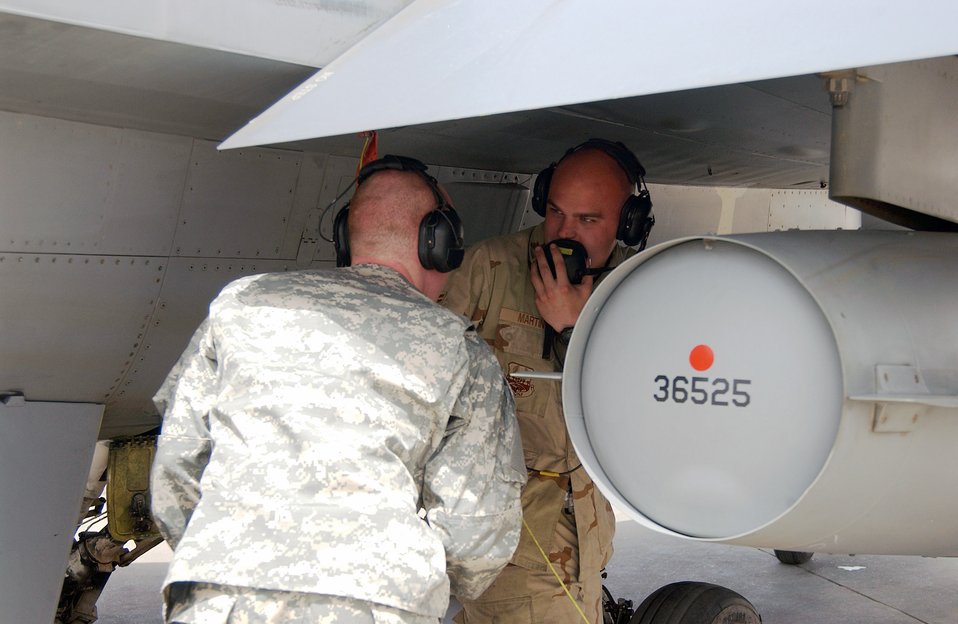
Balad Airman gets chance visit with Army brother

Staff Sgt. Samuel Martin (right) shows his brother, Army Sgt. Paul Martin, how he performs a maintenance check on an F-16 Fighting Falcon jet engine run inspection May 30 at Balad Air Base, Iraq. Sergeant Samuel Martin is assigned to the 14th Air Expeditionary Maintenance Unit and Sergeant Paul Martin is a satellite imagery analyst with the 3rd Brigade, 1st Calvary Division from Fort Hood, Texas. The Airman got a chance to meet his brother who was passing through with his Army unit on the way to Camp Victory, Iraq.